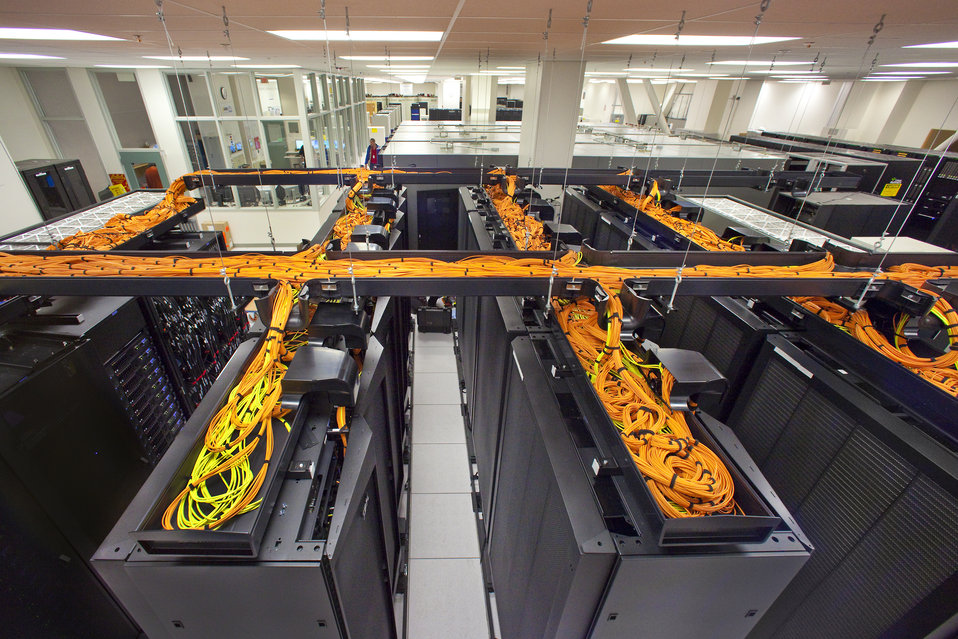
NAT'L ENERGY RESEARCH SCIENTIFIC COMPUTING CENTER (NERSC) AT LBNL IS 1 OF 2 CENTERS HOSTING THE MAGELIAN CLOUD COMPUTING SYSTEM TO ASSESS THE ABILITY OF CLOUD COMPUTING TO HELP MEET DOE'S COMPUTATIONAL SCIENCE WORKLOAD.

Magellan is built on the IBM iDataplex chassis using 5,760 processor cores for a theoretical peak performance of 61.5 teraflop's. Funded under the Recovery Act.